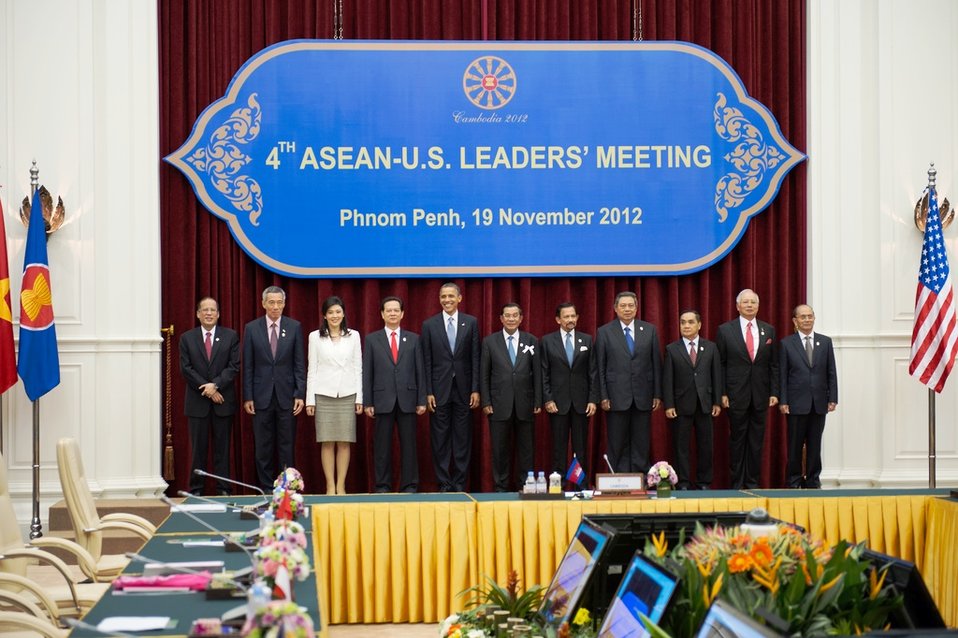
President Obama Poses for the ASEAN-U.S. Leaders' Meeting Family Photo

U.S. President Barack Obama poses for the ASEAN-United States Leaders' Meeting family photo at the Peace Palace in Phnom Penh, Cambodia, November 19, 2012. President Obama is the first U.S. President to visit Cambodia.